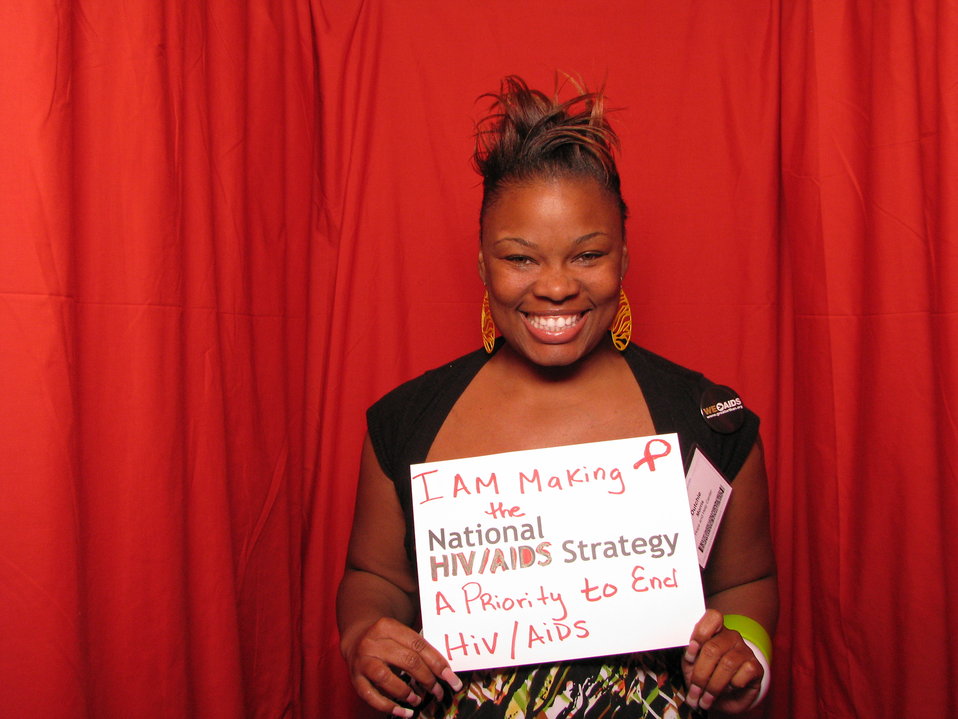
I am Making the National HIV/AIDS Strategy a Priority to End HIV/AIDS

From the AIDS.gov photo booth at the U.S. Conference on AIDS, September 2010 (Orlando, FL).